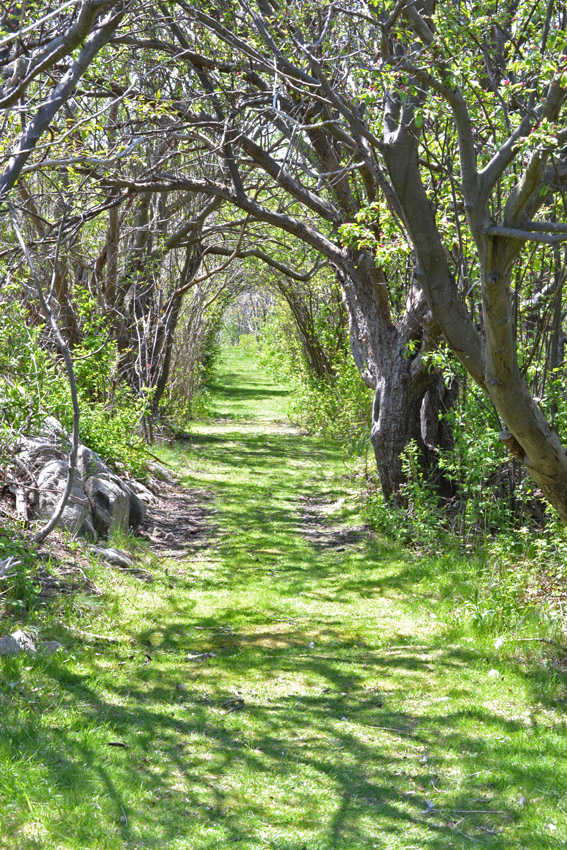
Annes Way

Thacher Island National Wildlife Refuge, MA.